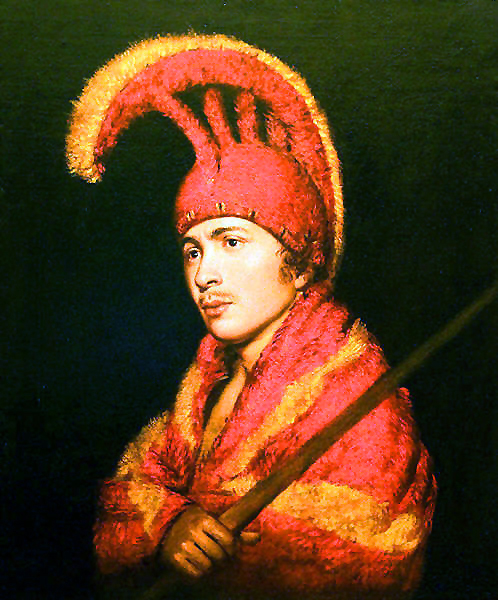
Man Wearing Feather Cloak and Helmit, oil on canvas painting attributed to Rembrandt Peale, c. 1805-1810, Bernice P. Bishop Museum